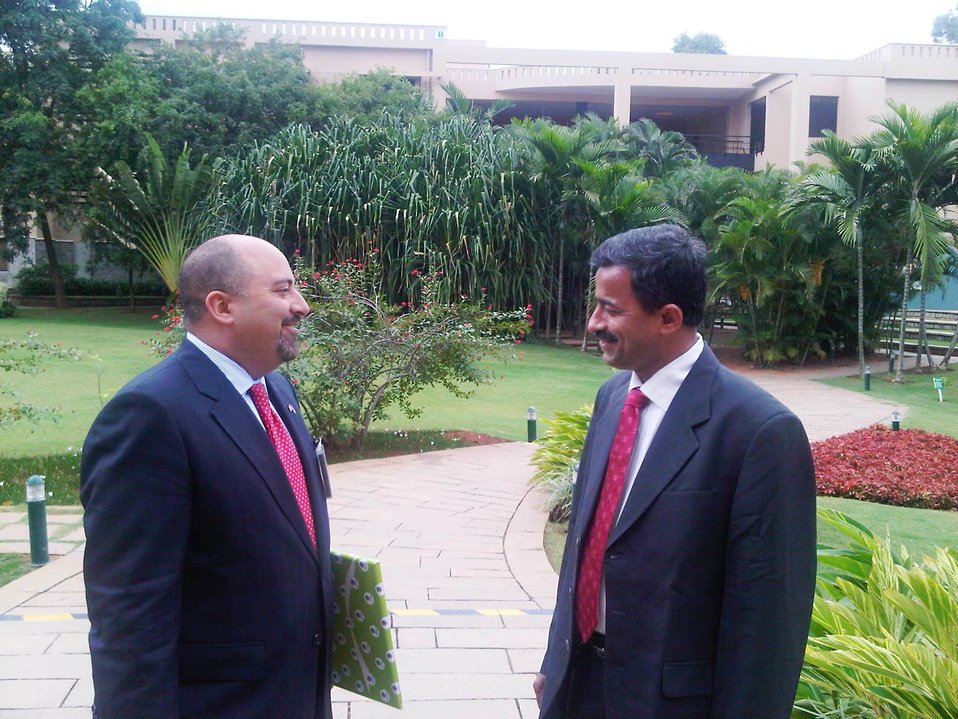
Acting Deputy Assistant Secretary Keshap Speaks With Vasudev Nayak

U.S. Acting Deputy Assistant Secretary of State for South and Central Asian Affairs Atul Keshap speaks with Vasudev Nayak in Bangalore, India, in July 2010.